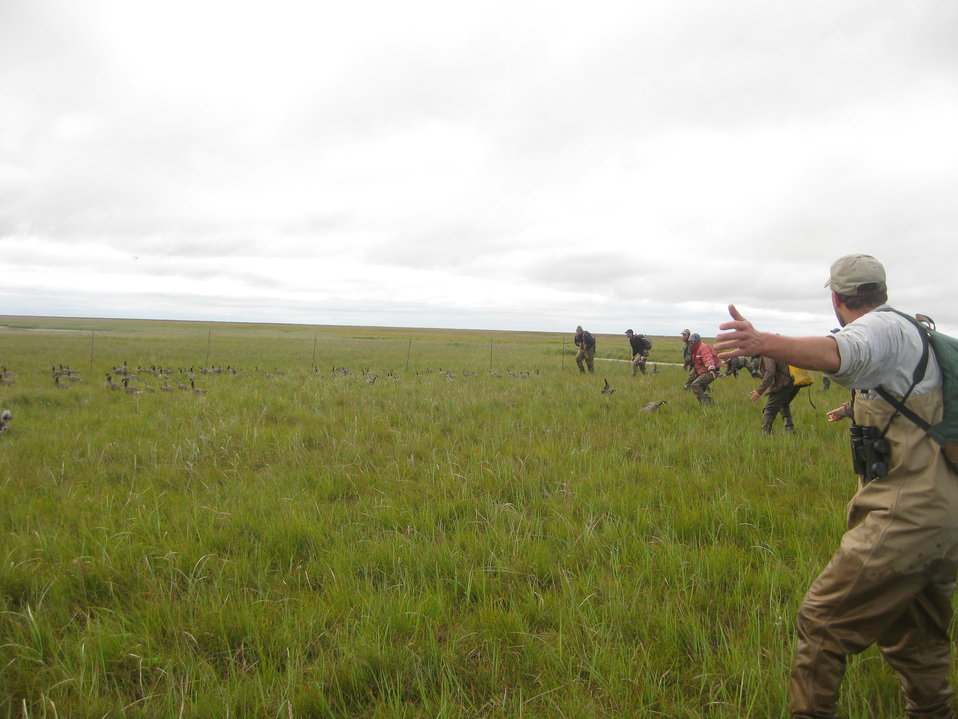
Pushing geese

A group of biologists, volunteers, biotechs, refuge staff, migratory bird management staff, etc joined forces to band and collar cackling cackling geese on the Yukon-Kuskokwim Delta.

One of the operations involved pushing family flocks into a large catch pen.

USFWS Yukon Delta NWR